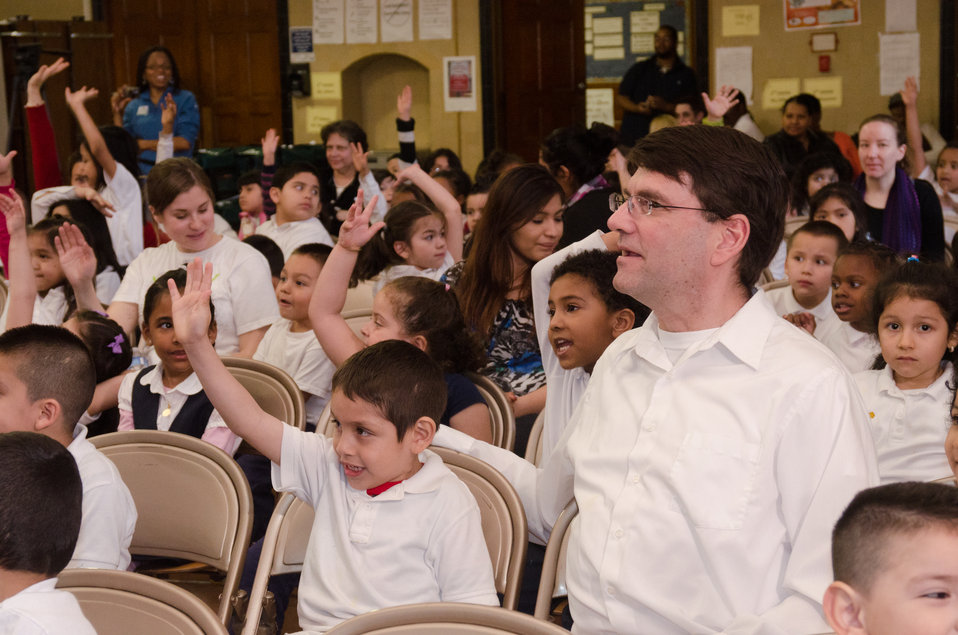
Dual language (Spanish) kindergarten teacher James Hennessy and Giovani Conteras (left of Hennessy) listen to The People’s Garden team for W. B. Powell Elementary School, (consisting of the Washington Capitols, U.S. Department of Agriculture and D.C. Public Schools in Washington, D.C.) who revealed to 289 parents and students, the School Garden Design Concept on Thursday, March 10, 2011. The design draft was created by Forest Service landscape architect Matt Arnn, with the support of Natural Resources Conservation Service landscape architect Bob Sneickus, Outreach and Education Coordinator Annie Ceccarini and Project Manager Leslie Burks who worked with the Principal Janeece Docal and the school during an earlier visit to develop illustrated ideas from parents and students. Representing the Washington Capitols is Defenseman, Number: 52 Mike Green, Comcast SportsNet Analyst Alan May and Director of Community Relations Elizabeth Wodatch.